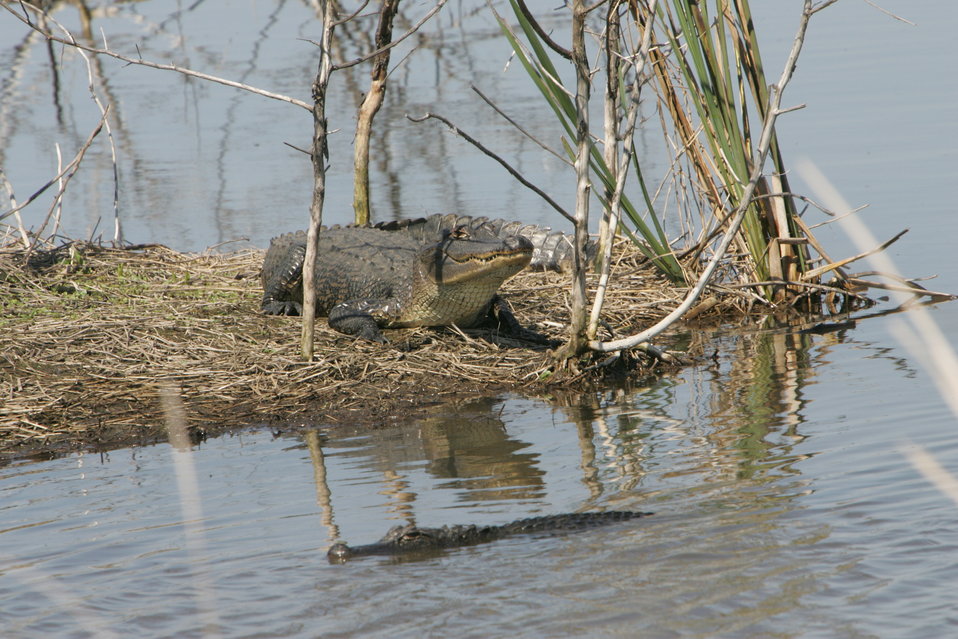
American Alligator

An alligator suns by the shore.